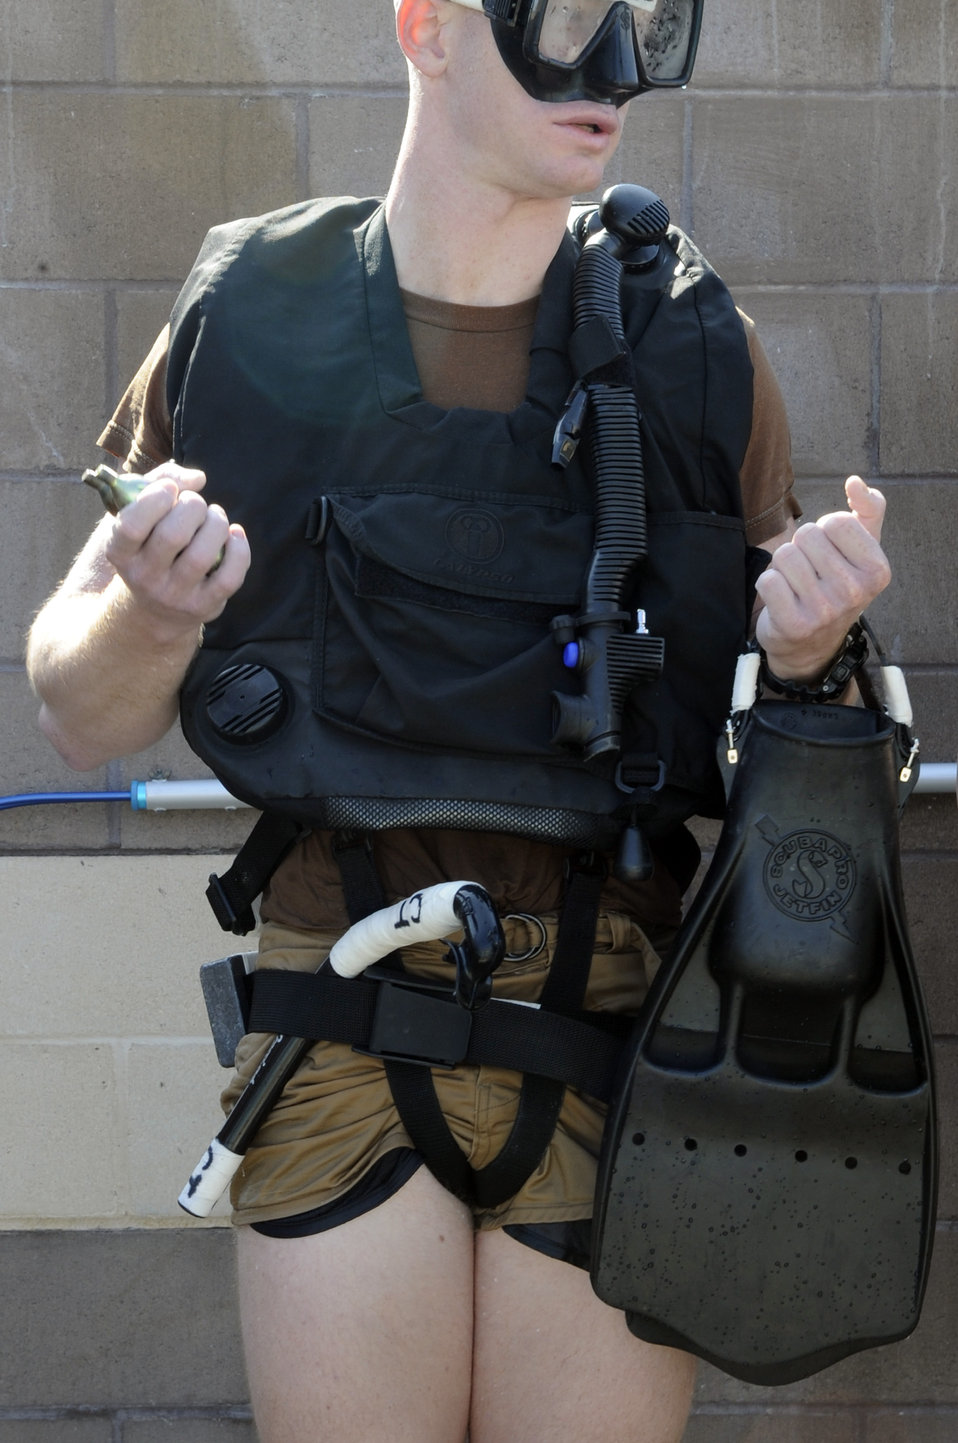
Special Tactics Training

A special operations Airmen in training waits to be inspected Feb. 10 during their pre-scuba formal training at Hurlburt Field, Fla. Instructors make sure their gear is placed in the proper place for safety precautions. Airmen are assigned to the Special Tactics Training Squadron.